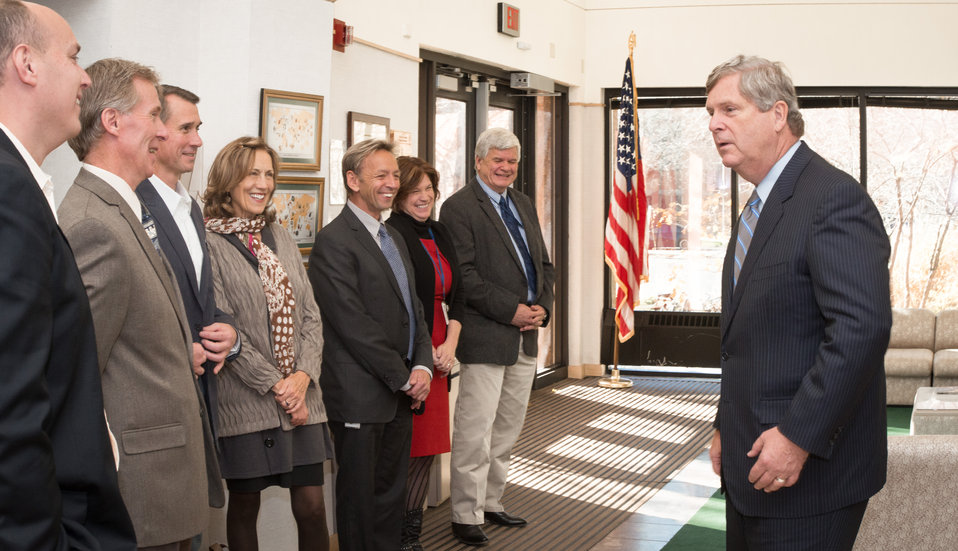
Agriculture Secretary Tom Vilsack, right, chats with, left-right, Cool Planet Energy Systems Strategic Partnerships Director Wes Bolsen, Natural Resources Conservation Service (NRCS), Greeley, CO Area Conservationist, Dr. Roy Hall, Farm Service Agency (FSA) Executive Officer, Dr. David Nix, Rural Development (RD), Colorado State Director, Dr. Trudy Kareus, Agriculture Research Service (ARS), National Center for Genetic Resources Preservation (NCGRP) Research Leader, Geneticist, Location Coordinator Dr. David Dierig, NCGRP Plant Germplasm Preservation Research Unit (PGPRU) Research Leader, Lead Scientist Dr. Christina Walters, and ARS Northern Plains Area Director Dr. Larry Chandler, before he meets with the employees and staff of the NCGRP to see first-hand the importance of agricultural research provided by ARS scientists and academic researchers funded by the National Institute of Food and Agriculture; and how the Food, Farm and Jobs Bill can continue adequate investments in agricultural research at NCGRP in Ft. Collins, CO, on Wednesday, Nov. 6, 2013.